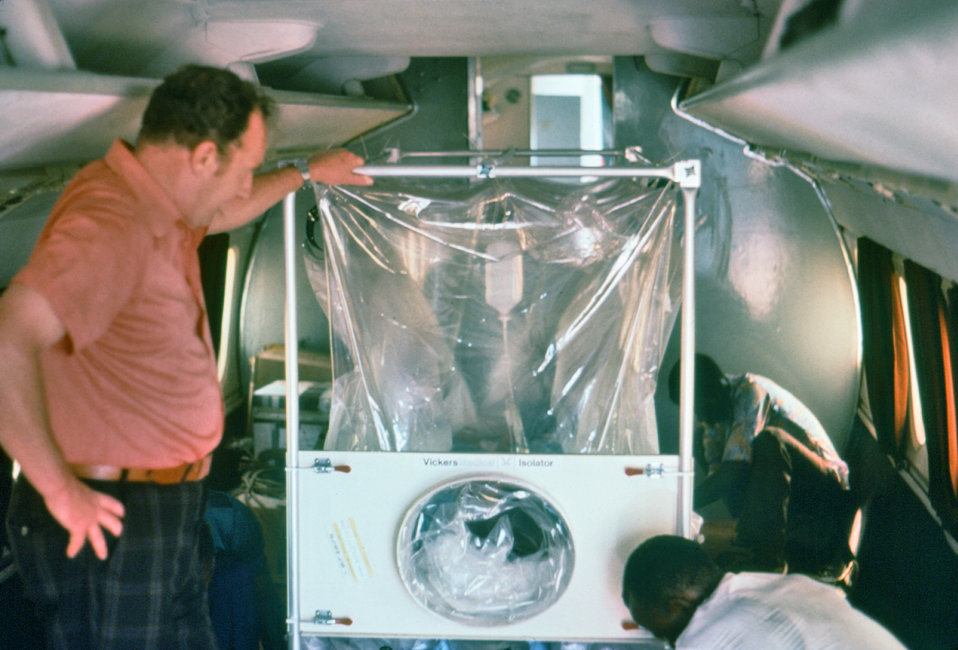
This 1976 photograph showed the inside of an Air Zaire 'Fokker Friendship' airplane, which transported a suspected Ebola patient during his medical evacuation from Yambuku, Zaire to a hospital in Johannesburg, South Africa.